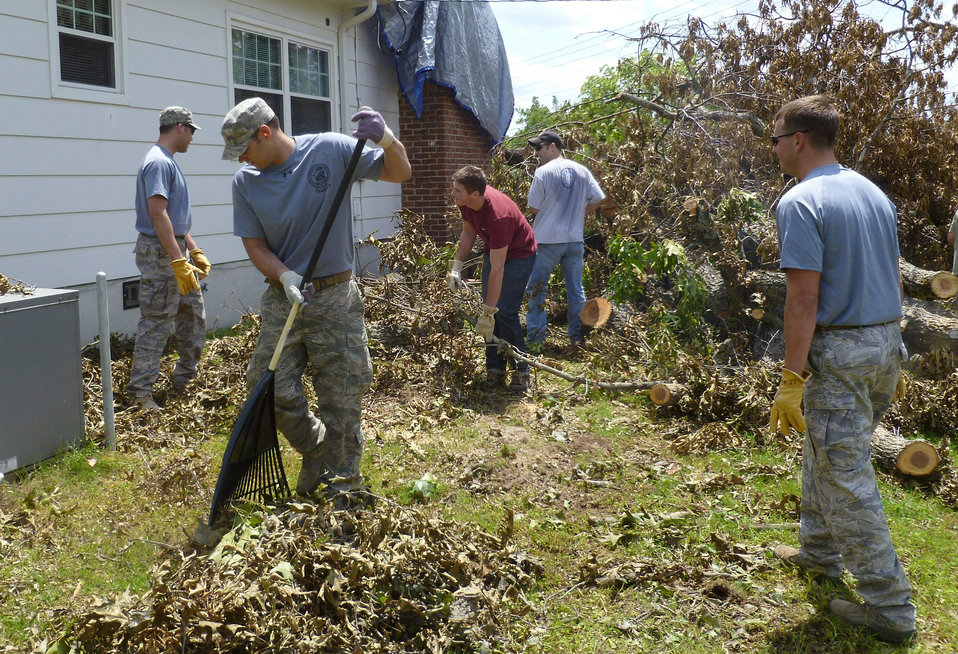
TACP volunteers

Airmen from the 15th and 165th Air Support Operations Squadrons remove tree debris that damaged the home of Bobbie Citty, an East Ridge, Tenn., resident who's home was damaged by tornadoes April 25 through 28 2011.